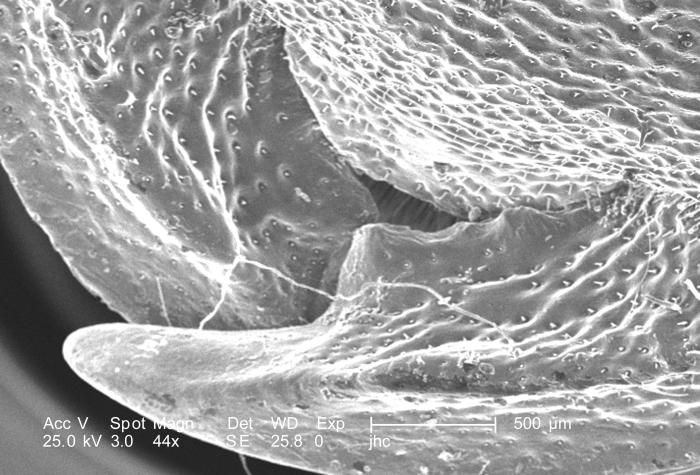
At a low magnification of 44X, this scanning electron micrograph (SEM) focused on the head region of an adult 'figeater' beetle, Cotinis mutabilis. Note the insect's two overlapping mandibles. For successively greater magnifications of this region with its exoskeletal features PHIL 9953, 9954, 9956, 9957 and 9958.